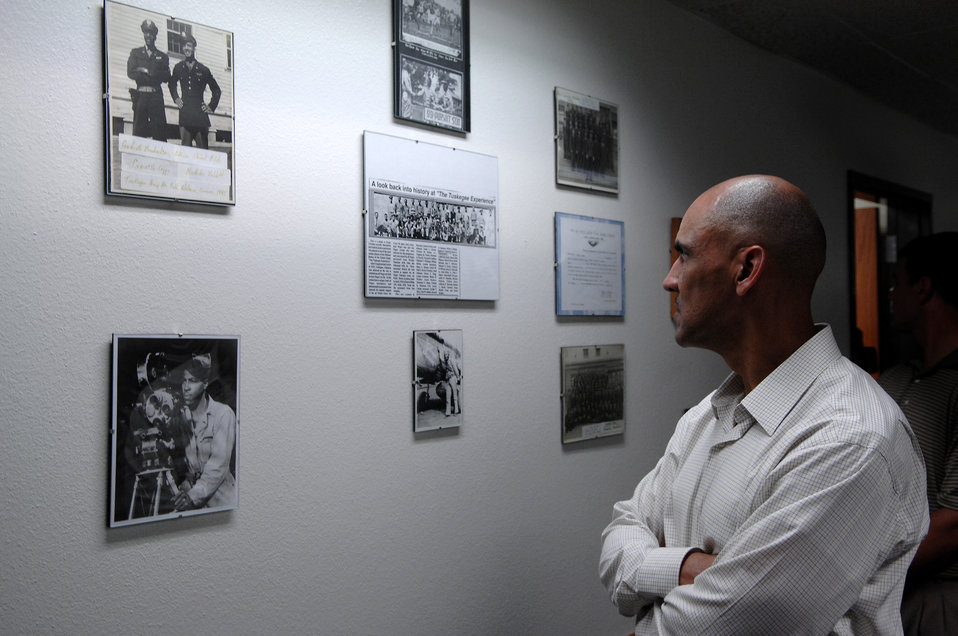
Indianapolis Colts visit Randolph Air Force Base

Indianapolis Colts head coach Tony Dungy looks at Tuskegee Airmen memorabilia at the 560th Flying Training Squadron at Randolph Air Force Base, Texas, June 1. Colts team members spent the day visiting with base personnel and school children, enhancing the already strong relationship between the team and the Air Force. Mr. Dungy's father, Wilbur Dungy, was a Tuskegee Airman.